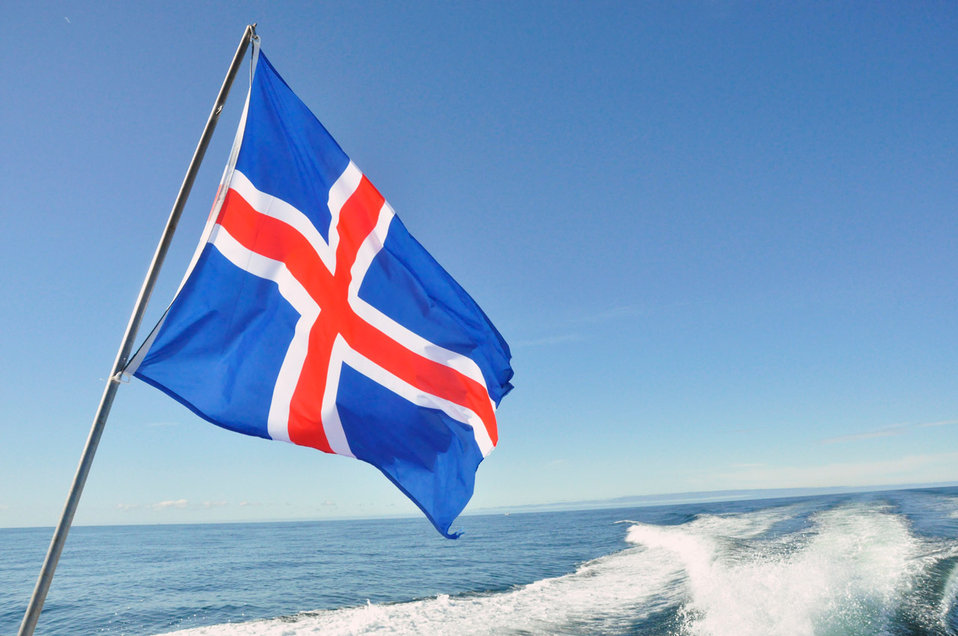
Iceland flag waving with the sea and sky in the background.